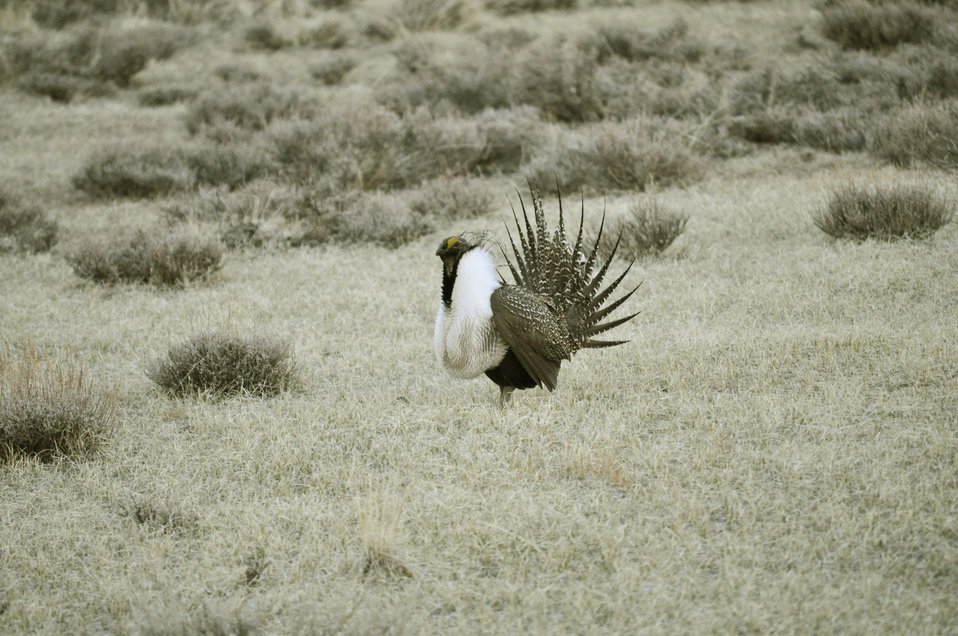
Male greater sage-grouse struts at lek (dancing or mating grounds) to attract females near Bodie, California.